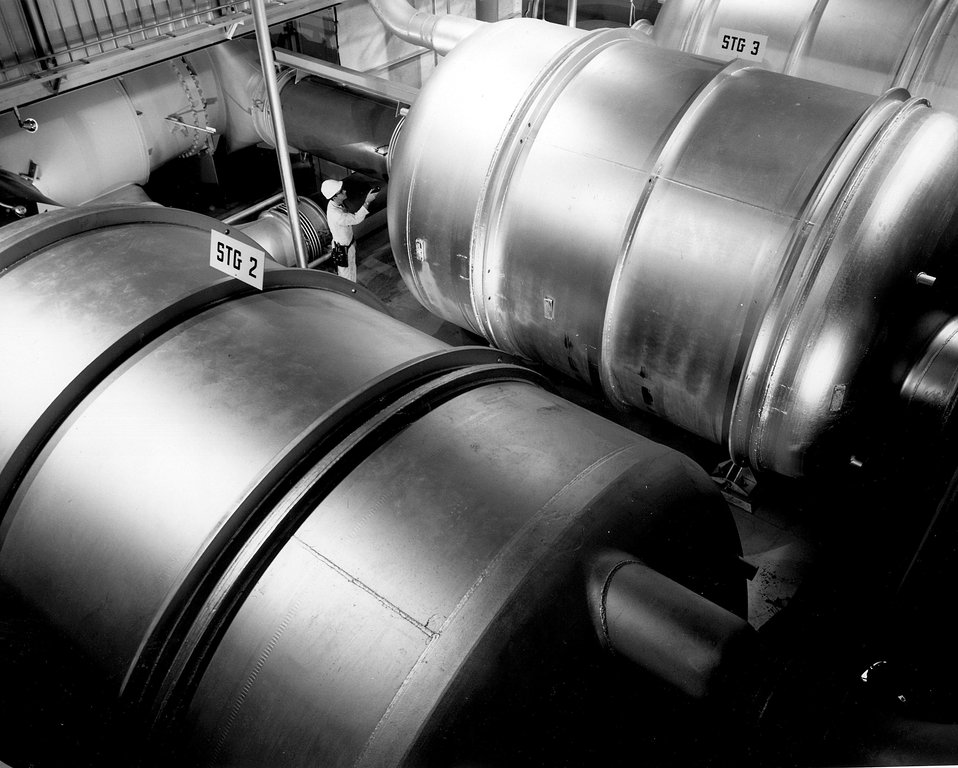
Large size compressors and converters are shown at the Energy Research and Development Administration's Oak Ridge (Tenn.) Gaseous Diffusion Plant. Circa 1972.